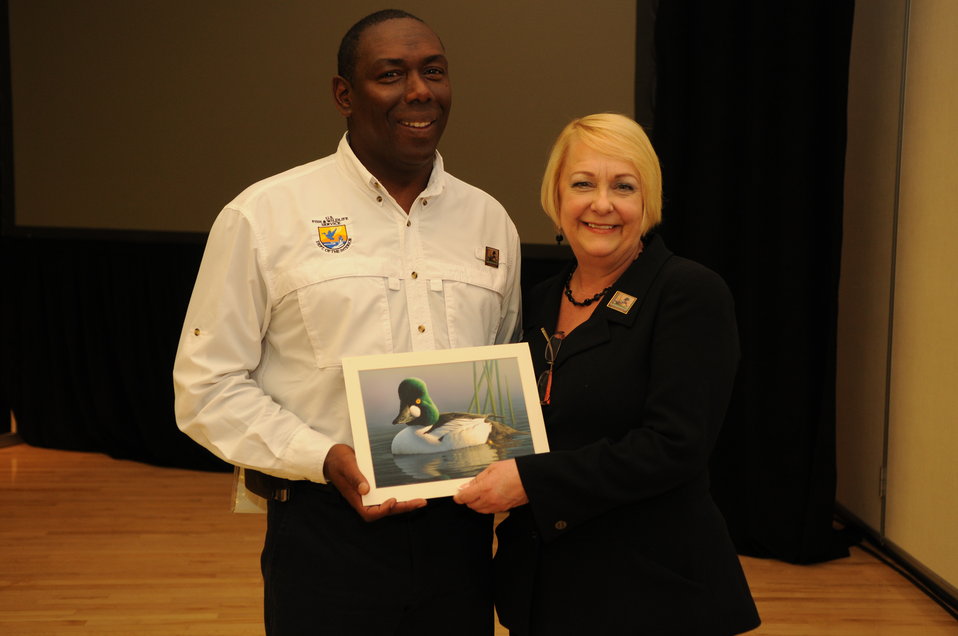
Everyone Loves a Winner

The U.S. Fish & Wildlife Service sponsored the 2012 Federal Duck Stamp Art Contest September 28 and 29 in Ogden, Utah, at Weber State University. A panel of five judges was responsible for choosing the art work used to design the 2013-2014 Migratory Bird Hunting and Conservation Stamp.